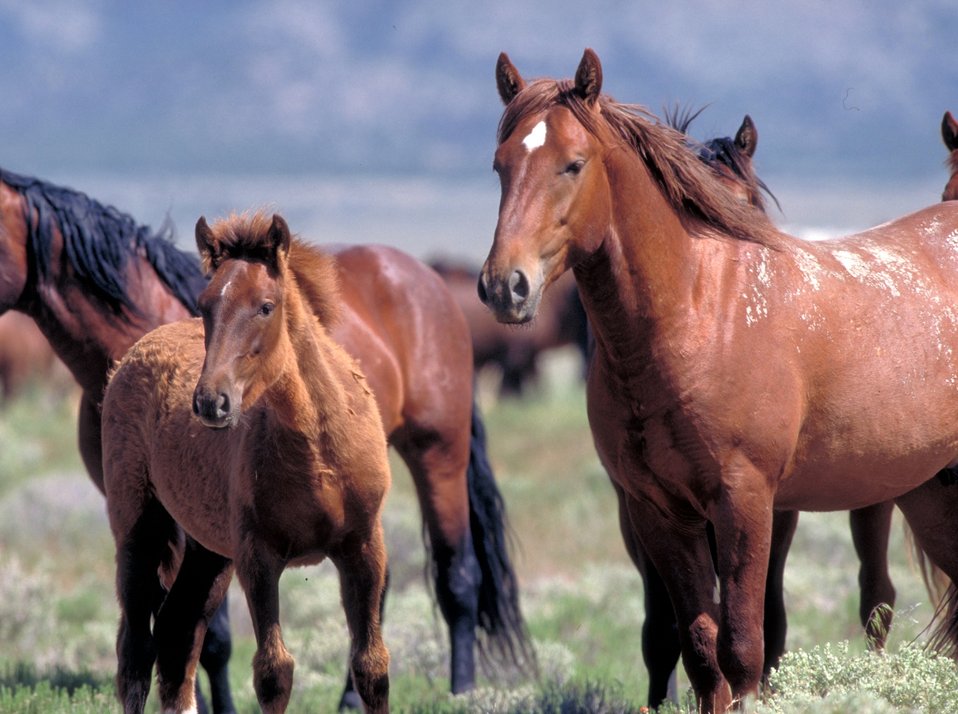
Onaqui Herd near Dugway, Utah.